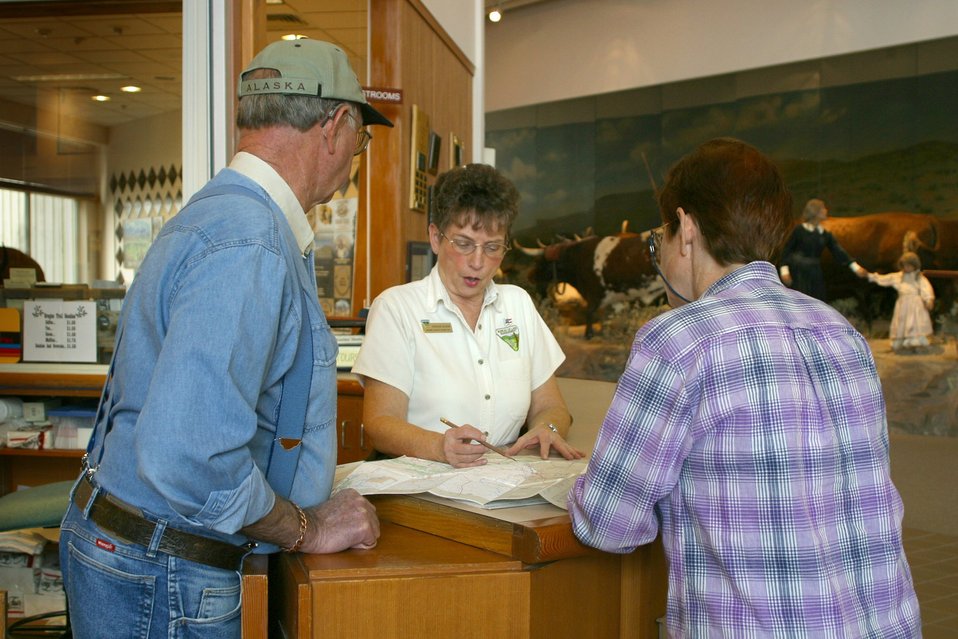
BLM employee Virginia Bloom giving visitors information about the Interpretive Center and the surrounding area.